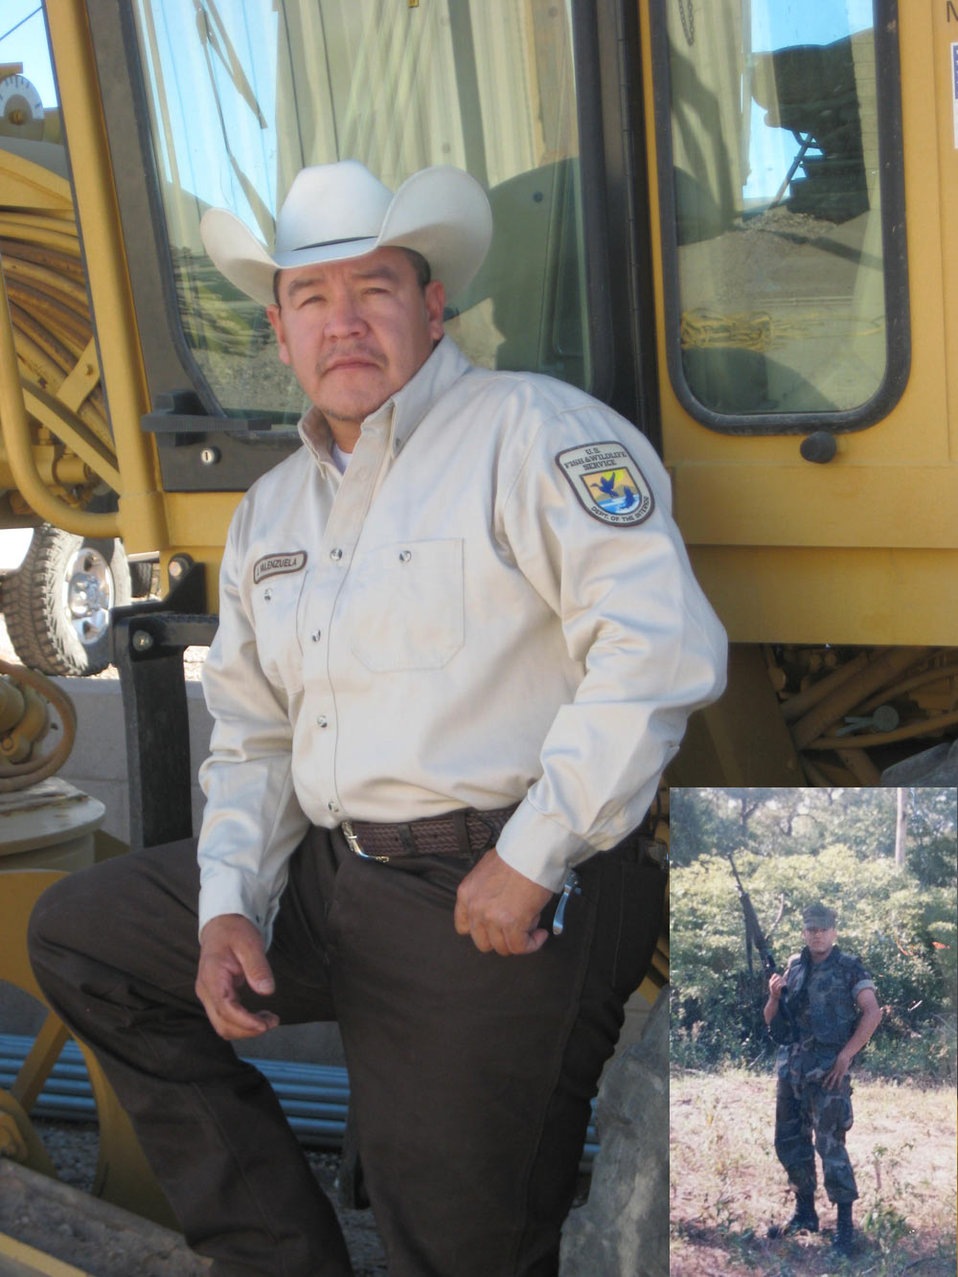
Jose Luis Valenzuela-Southwest Region

Marine veteran Jose Luis Valenzuela is the Maintenance Mechanic at Cabeza Prieta National Wildlife Refuge in Arizona.